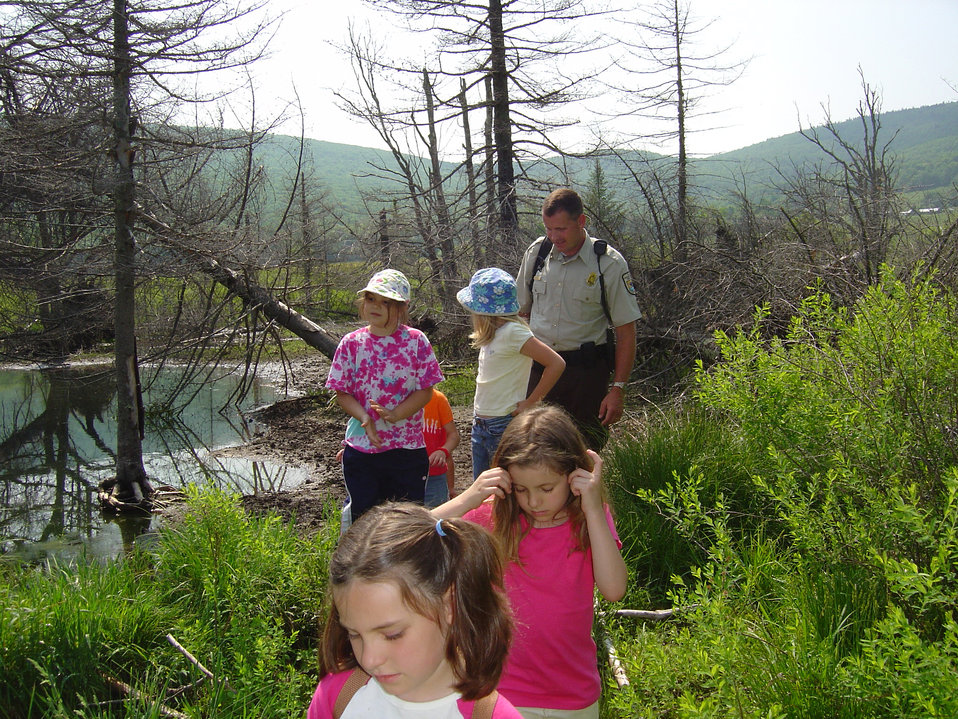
Field Trip through Freeland Tract

Photographed at Canaan Valley National Wildlife Refuge.